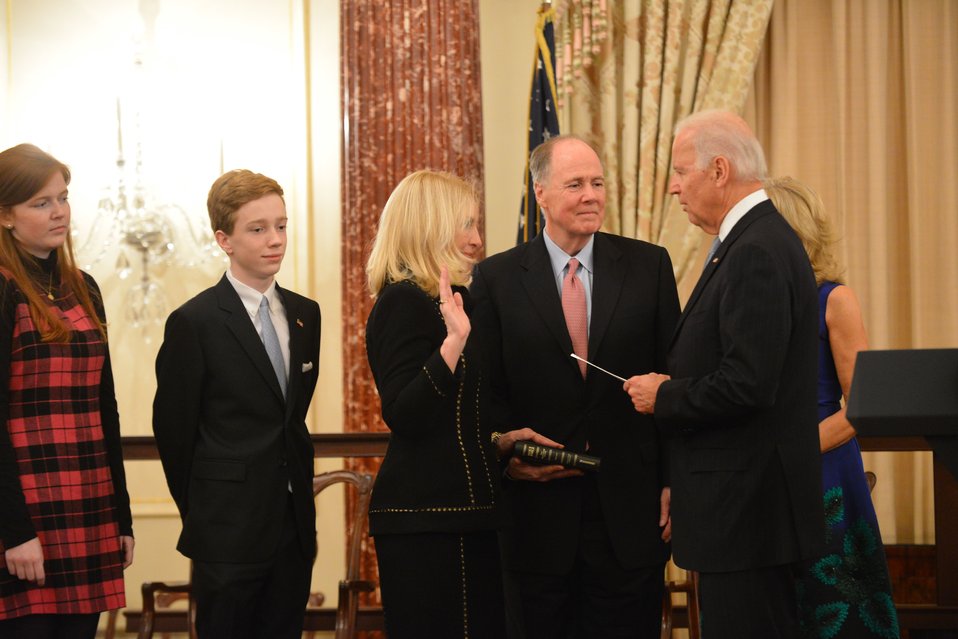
Vice President Swears in Ambassador Russell

With her family and Dr. Jill Biden looking on, Vice President Joe Biden swears in Catherine Russell as the U.S. Ambassador-at-Large for Global Women’s Issues at the U.S. Department of State in Washington, D.C., on January 17, 2014.